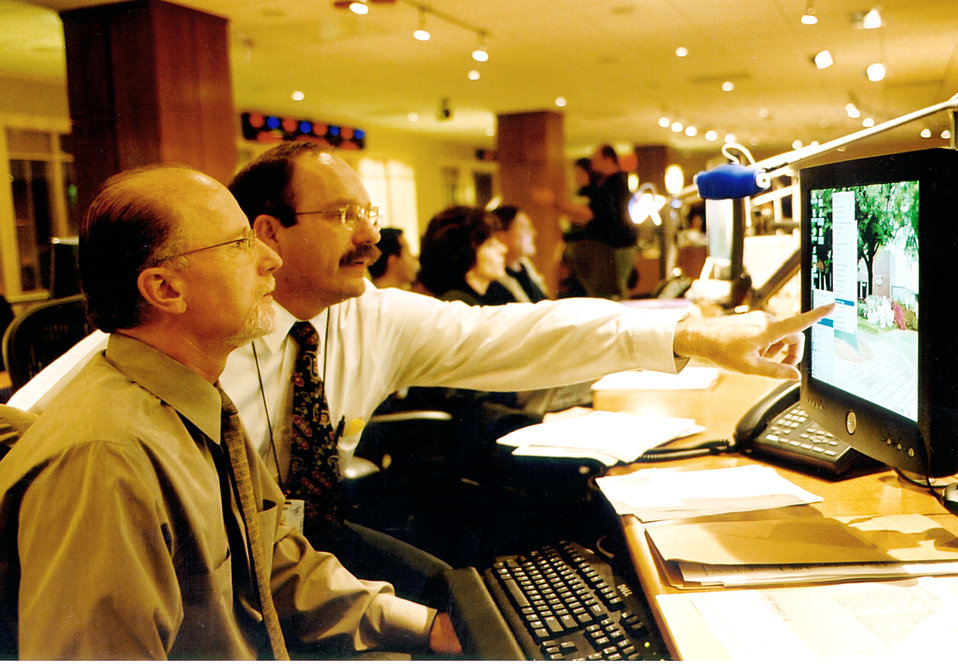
This is an image of Dennis Lenaway and Steve Boedigheimer inside the CDC's new Emergency Operations Center (EOC).